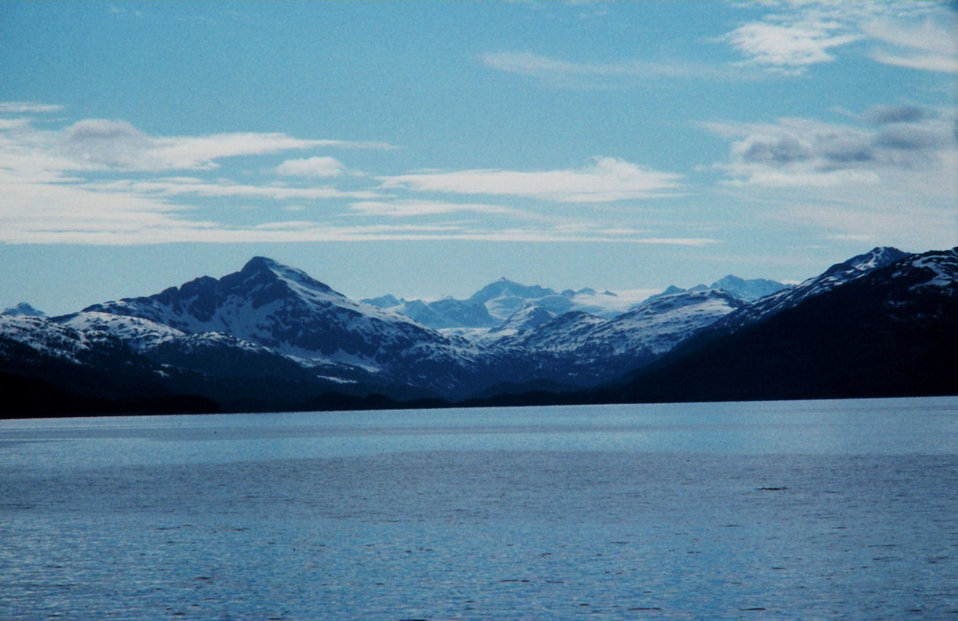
Prince William Sound